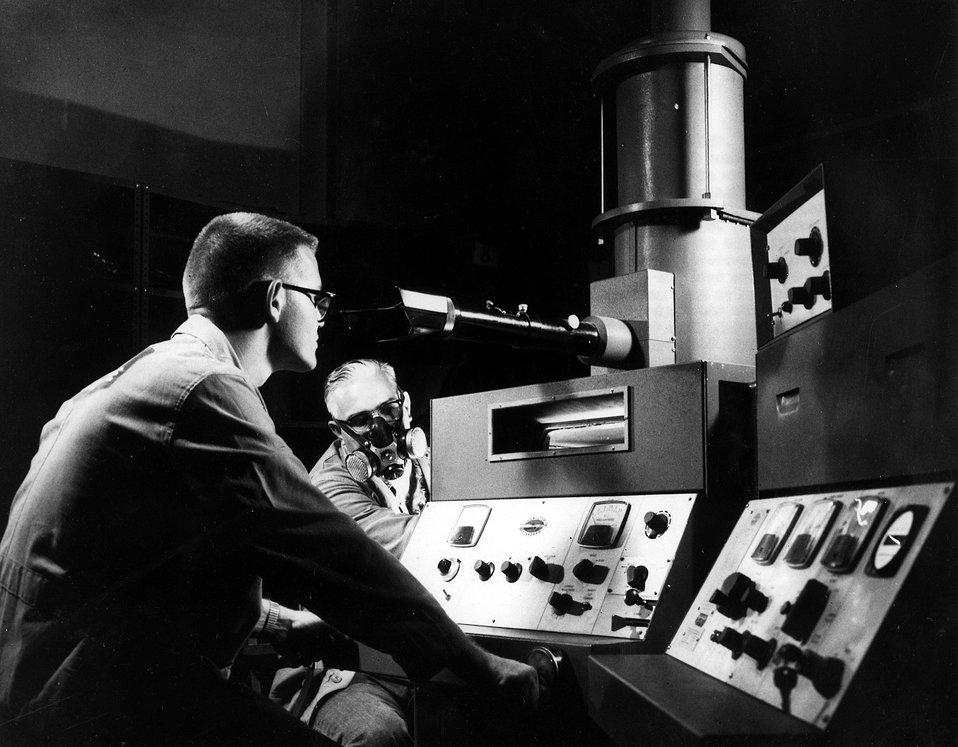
This electron beam welder at the Oak Ridge Y-12 Plant is used to weld toxic materials within a vacuum chamber. Advantages include deep weld penetration, tiny weld bead with little distortion and no atmospheric contamination. Circa 1966.